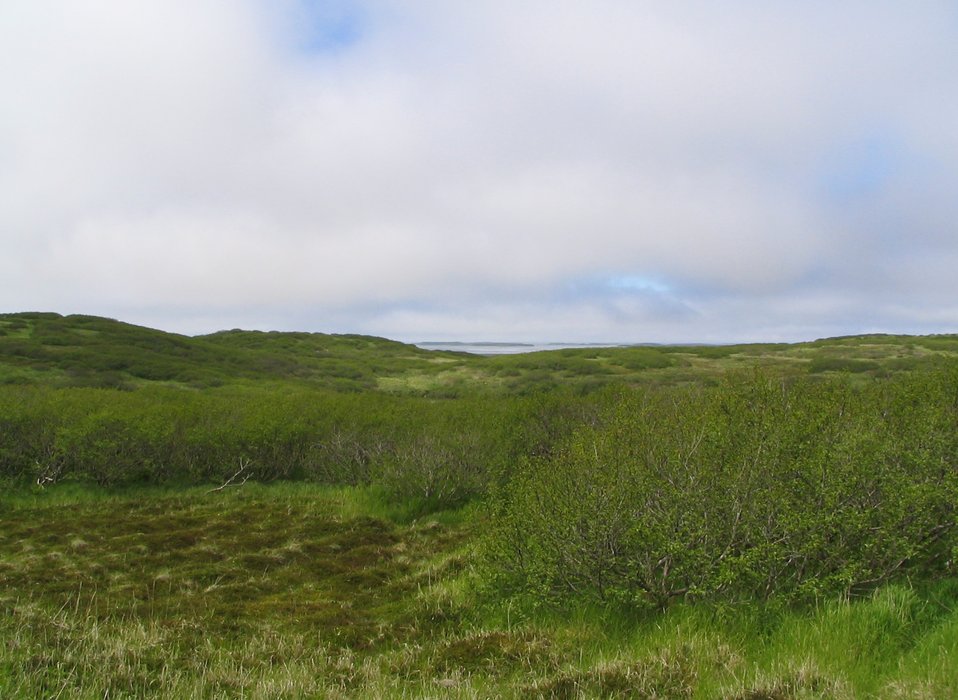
Tundra near Baldy Mountain

Izembek National Wildlife Refuge